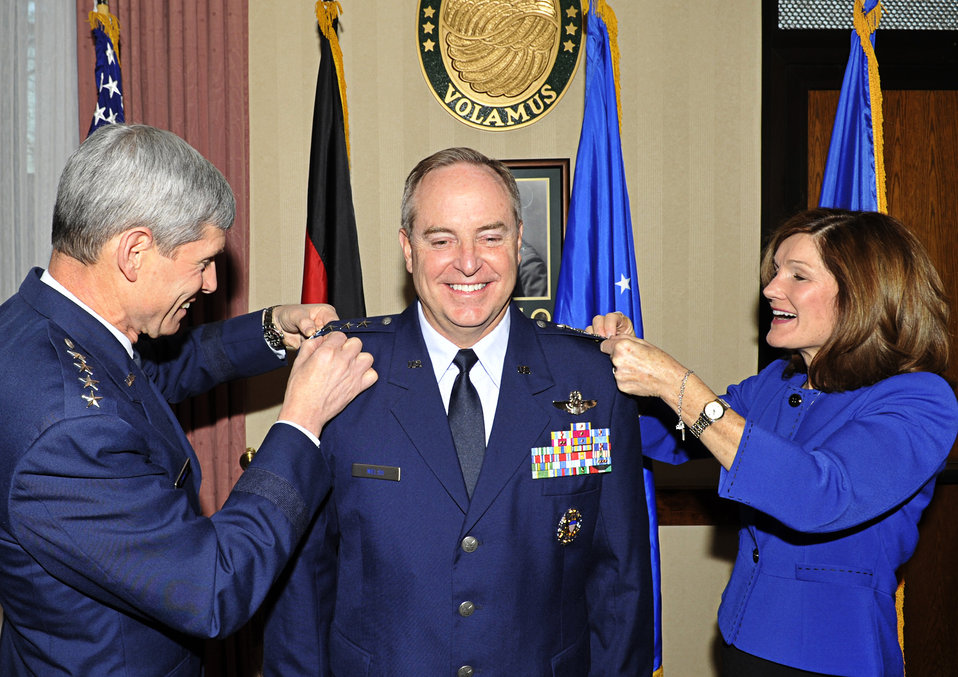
Gen. Welsh takes Command of USAFE

Air Force Chief of Staff Gen. Norton Schwartz and Betty Welsh pin the fourth star on Gen. Mark A. Welsh III Dec. 13, 2010, during a brief ceremony at Ramstein Air Base, Germany, immediately before General Welsh took command of U.S. Air Forces in Europe.